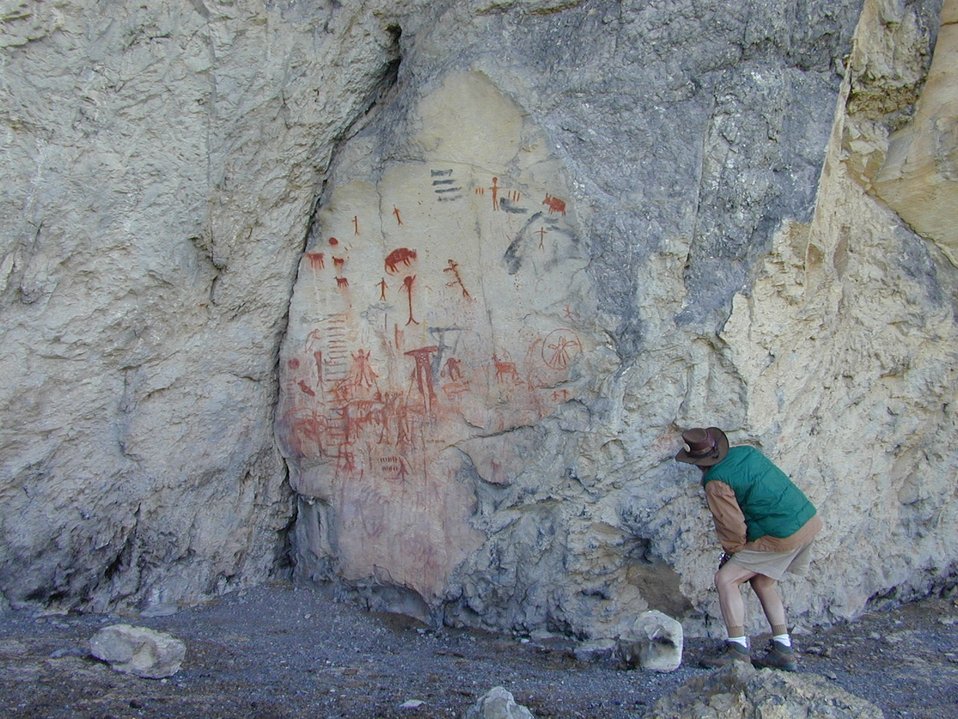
Birch Creek Valley Idaho Falls Field Office USRD Upper Snake River District